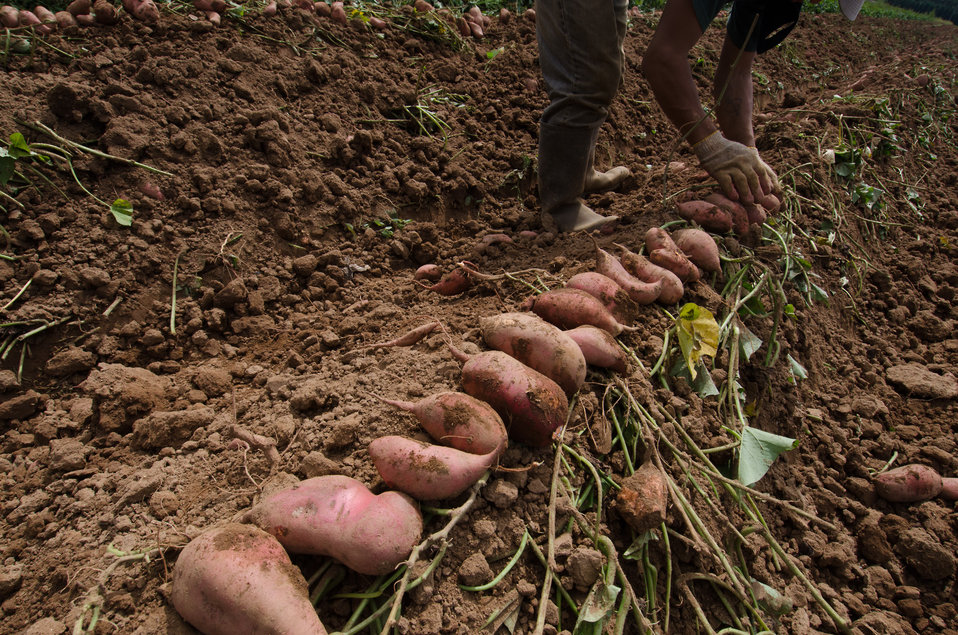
Harvested hand picked large sweet potatoes, at Kirby Farms in Mechanicsville, VA on Friday, Sept. 20, 2013. 200 acres of the farm are devoted to eggplant, spinach, beets, tomato, jalapeno peppers, melons and a variety of greens. Soybeans and small grain are grown on the remaining 300 acres. Using rotational crop practices allows Kirby Farms to double and triple crop yields. Wholesalers, who buy from this farm, sell the produce to major supermarkets in the Mid-Atlantic region, from North Carolina to Maryland. Restaurants in the local area prepare and serve the local bought produce to patrons in the Richmond, VA metropolitan area.